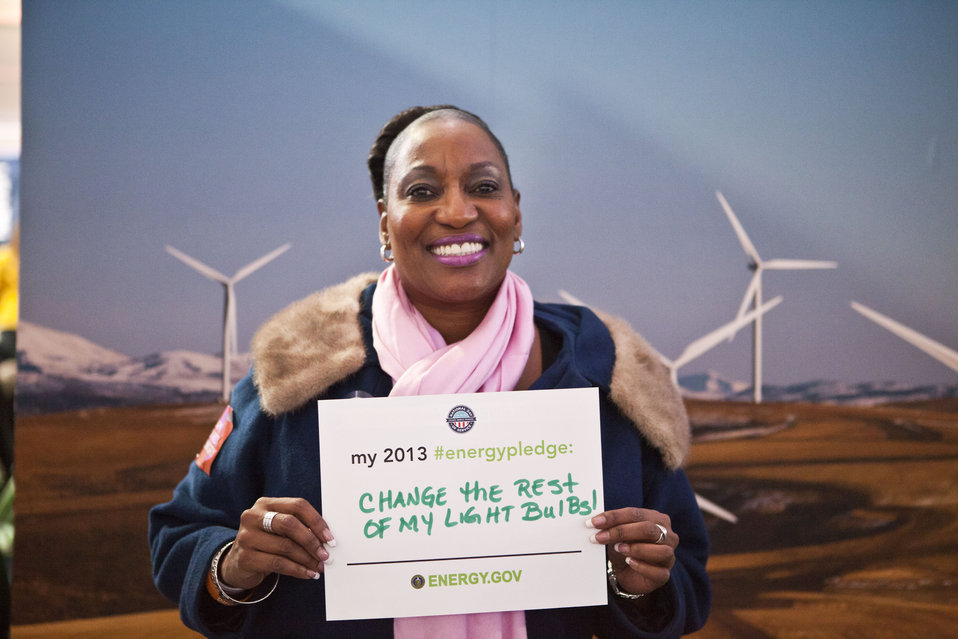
What's your #energypledge?